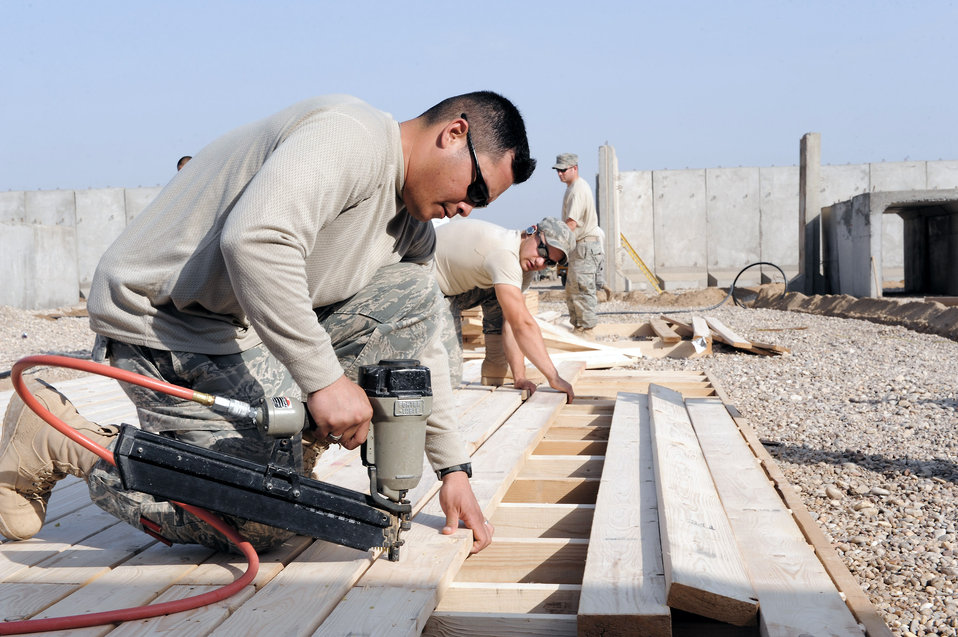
JET Airmen impress Soldiers at FOB Hunter

Staff Sgt. Richard Kahler constructs a floor for a shower unit Feb. 7. Sergeant Kahler is part of a 20-man team deployed to Forward Operating Base Hunter to provide a 64-tent living area to the Army. Sergeant Kahler is a 732nd Expeditionary Civil Engineer Squadron structures technician.